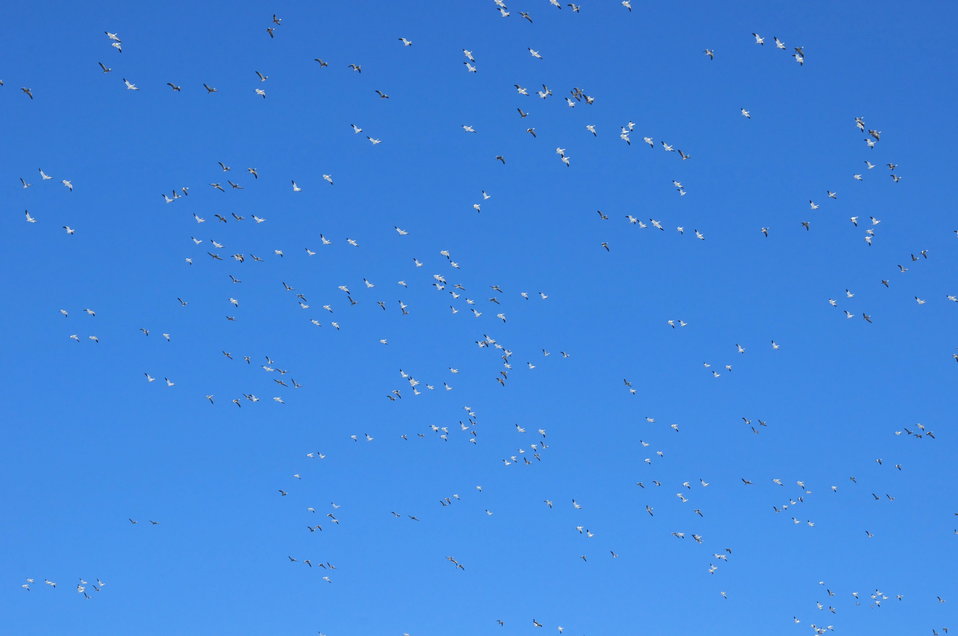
Snow Geese on Sand Lake NWR